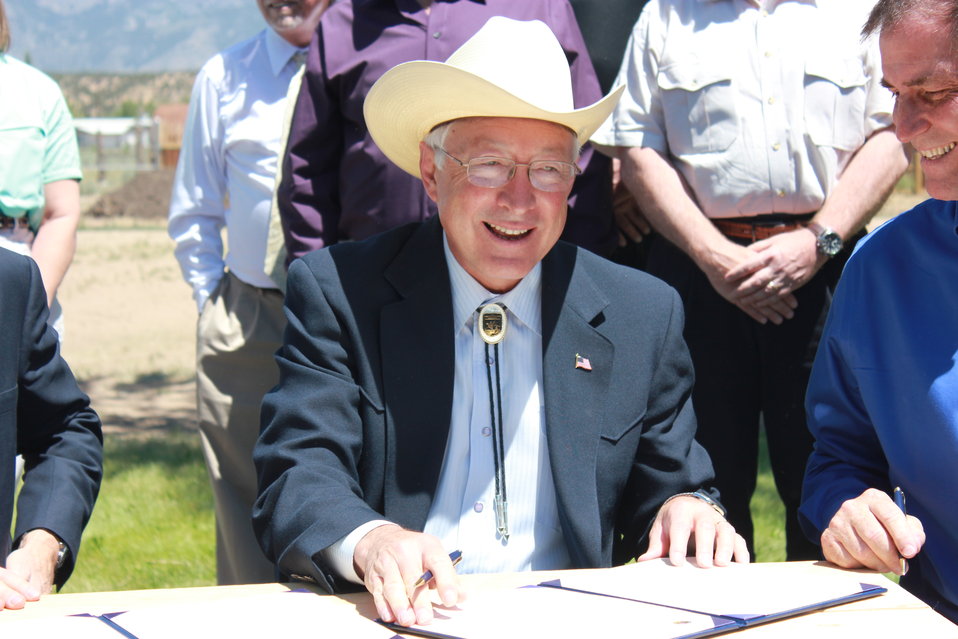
Historic Conservation Easement in Sangre de Cristo Mountains